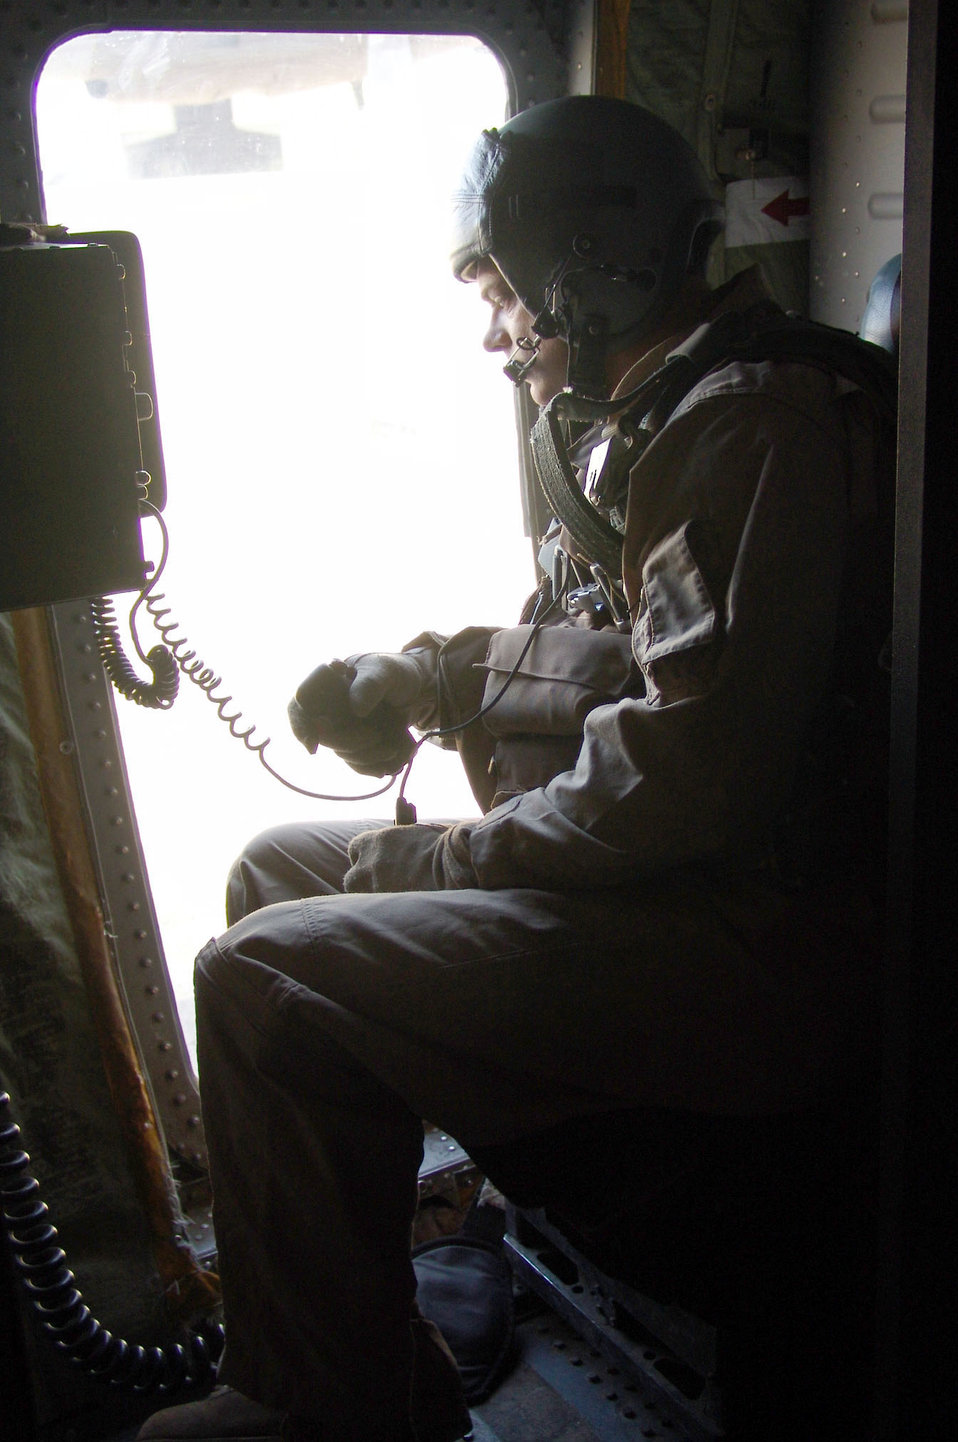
A spooky gunner

SOUTHWEST ASIA -- Tech. Sgt. Jim Jochum searches for threats from the ground and in the air. As an aerial gunner on an AC-130U Spooky Gunship, he also serves as a scanner. He completed his 150th combat mission on an AC-130U on July 6. The aircraft's primary missions include close-air support for convoys, air interdiction of targets and force protection for base defense. Sergeant Jochum is assigned to the Air Force Special Operations Detachment at a forward-deployed location and is deployed from Hurlburt Field, Fla.